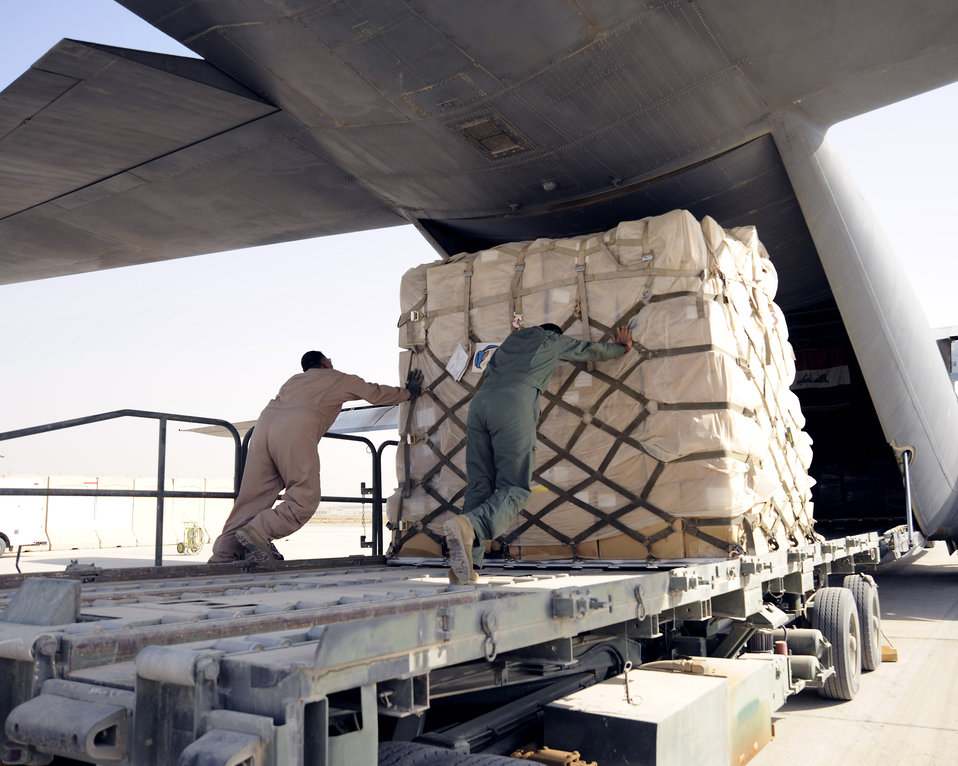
Iraqi relief

Iraq air force loadmasters push a pallet of donated supplies onto an Iraqi C-130 Sept. 22 at an air base in Iraq. This was the first Iraqi air force C-130-supported humanitarian airlift to Najaf, Iraq. The supplies are to be donated to internally displaced Iraqis at Camp Al-Manathera.